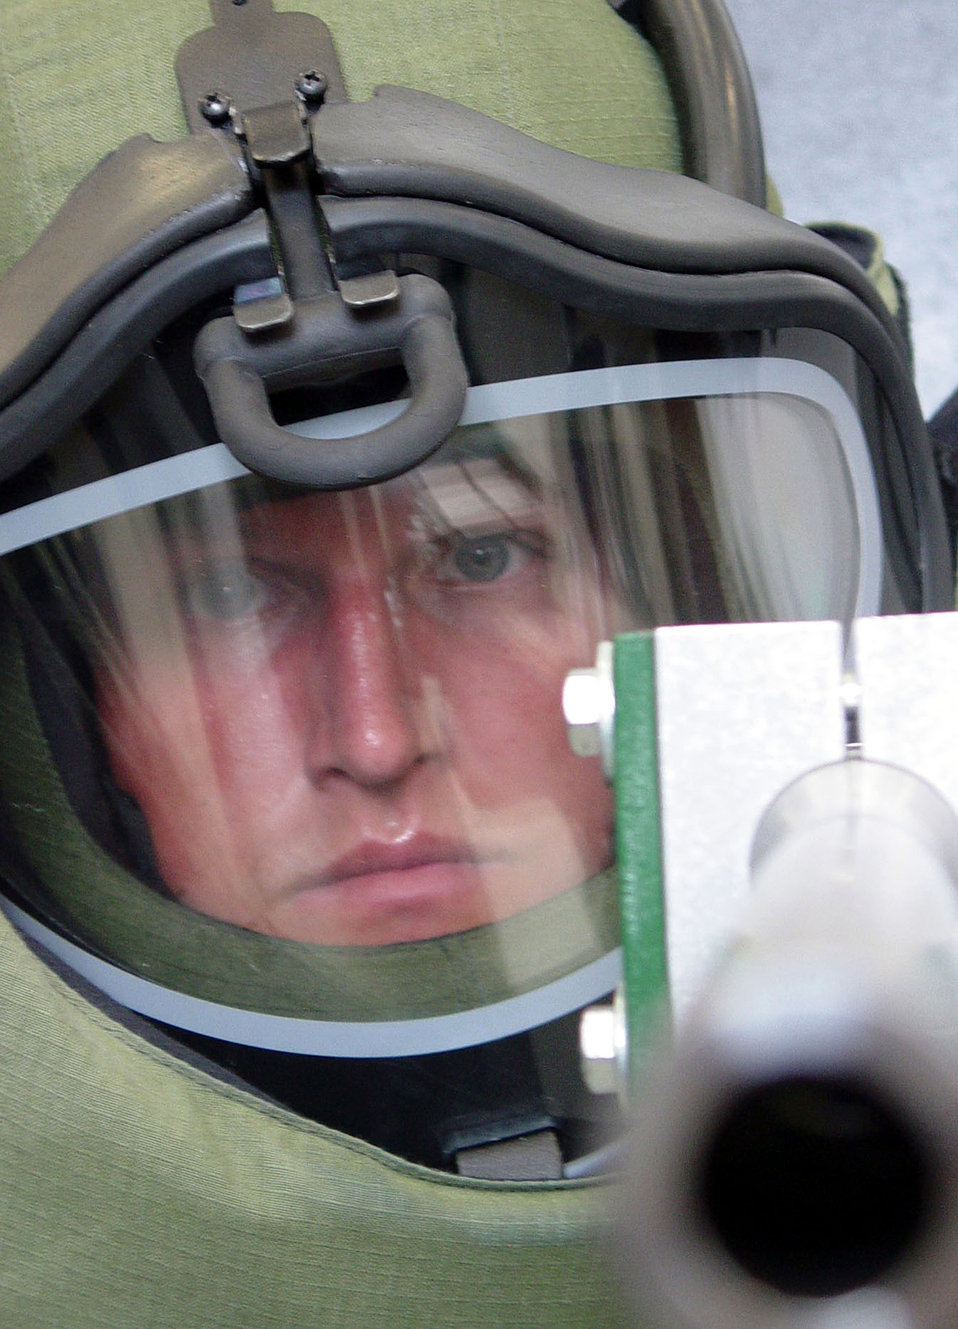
Percussion-actuated

INCIRLIK AIR BASE, Turkey (AFPN) -- Senior Airman Joseph Gorney takes one last look at the setup of his